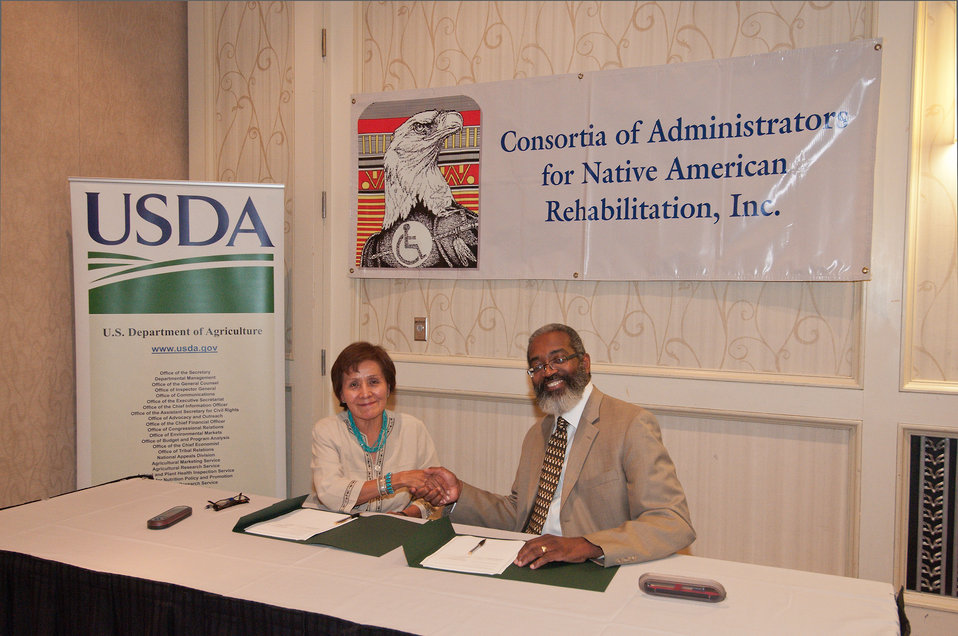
Treva Roanhorse (left), President Consortia of Administrators for Native American Rehabilitation and Dr. Gregory Parham, Acting Assistant Secretary of Administration, United States Department of Agriculture sign a Memorandum of Understanding agreeing to collaboration on improving employment for Native Americans and Alaska Natives in Crystal City, Virginia, on Tuesday, August 28, 2012.